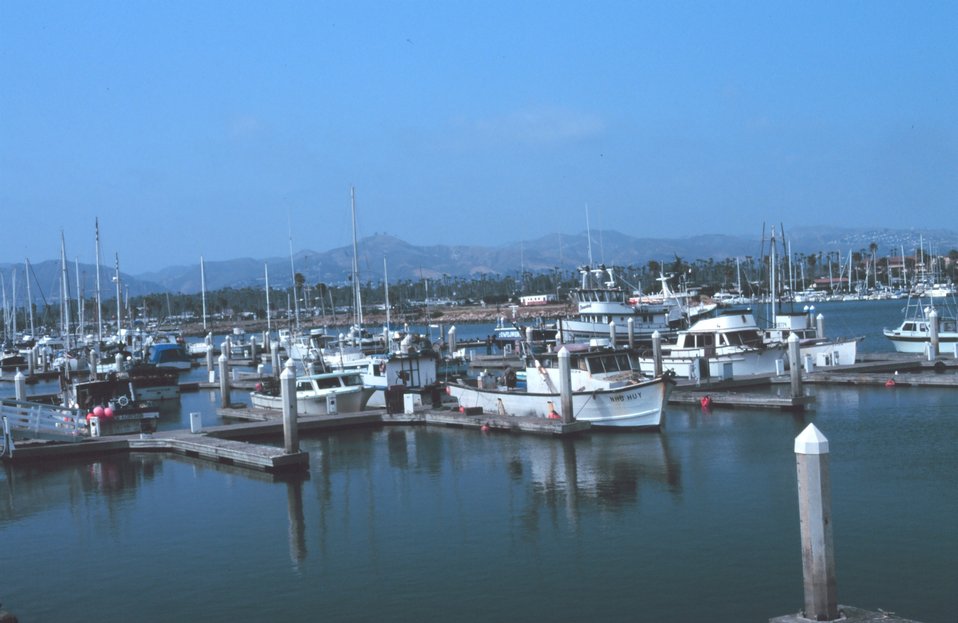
Fishing vessels at Channel Islands Harbor with the coast range visible